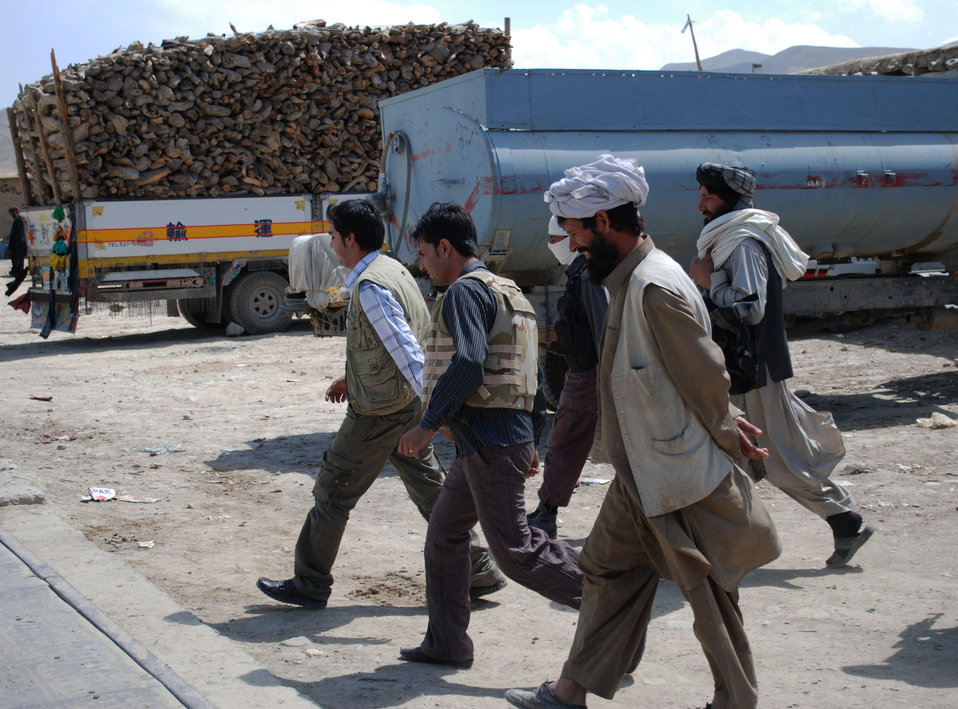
'On the Road' in Paktya Province